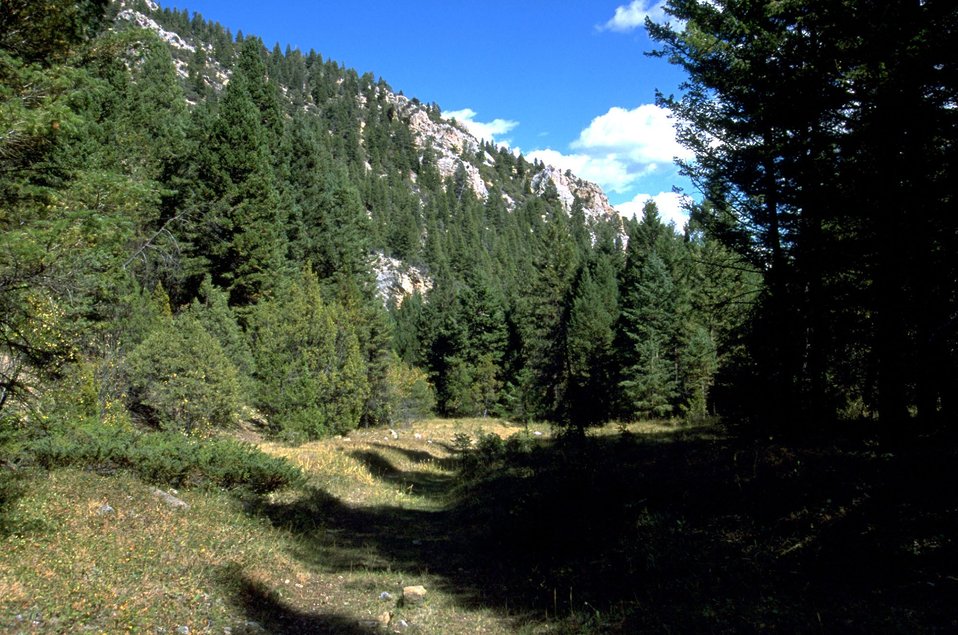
Lauren Canyon - Rock Pillars on the hillside